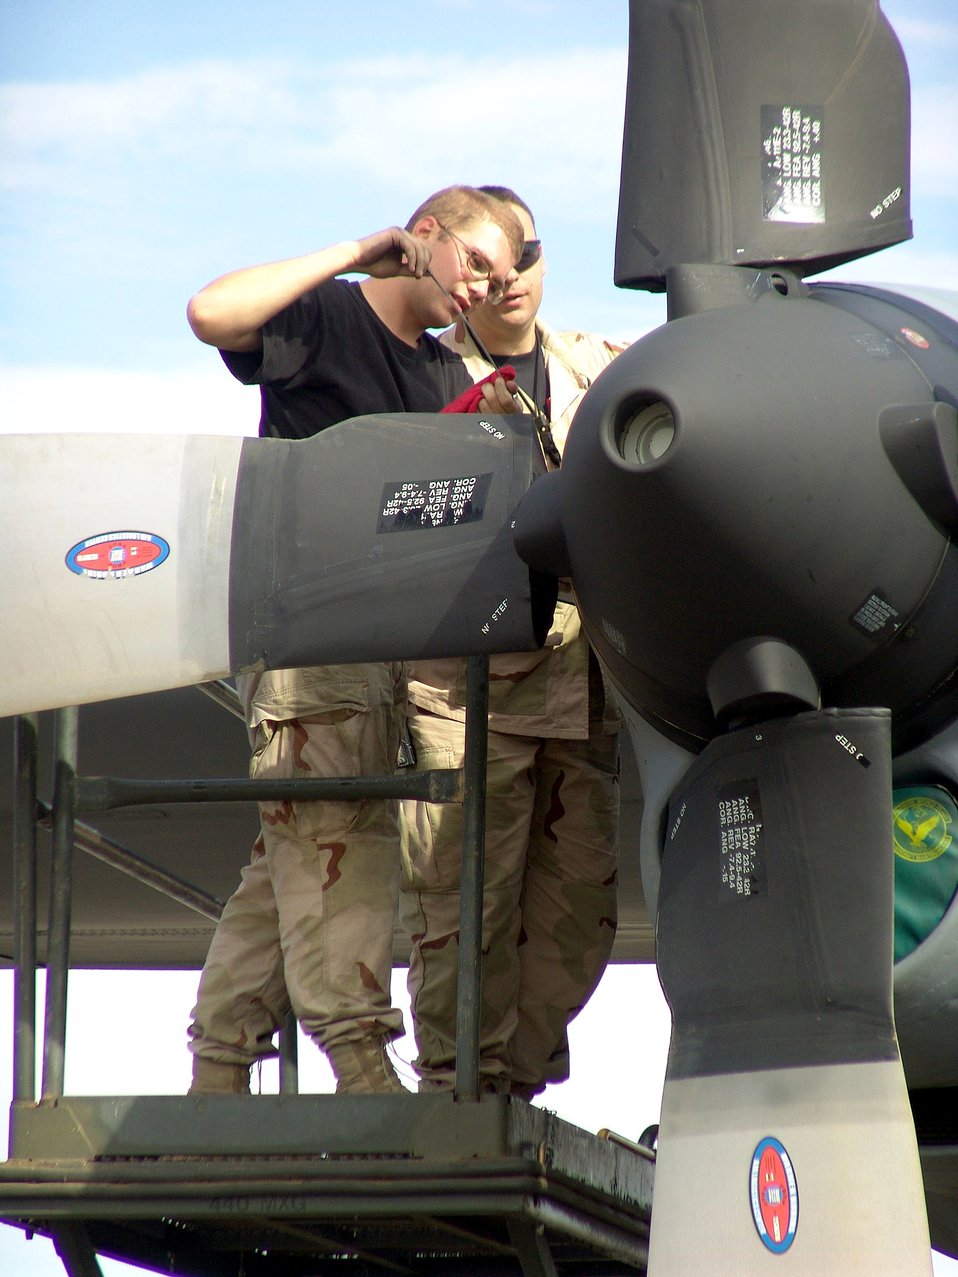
Oil check

SOUTHWEST ASIA (AFPN) -- Tech. Sgt. Chuck Schmidt (back) evaluates Senior Airman Joel Sass as he does an oil service check on a C-130 Hercules engine. Sergeant Schmidt and Airman Sass are with the 386th Expeditionary Aircraft Maintenance Squadron.